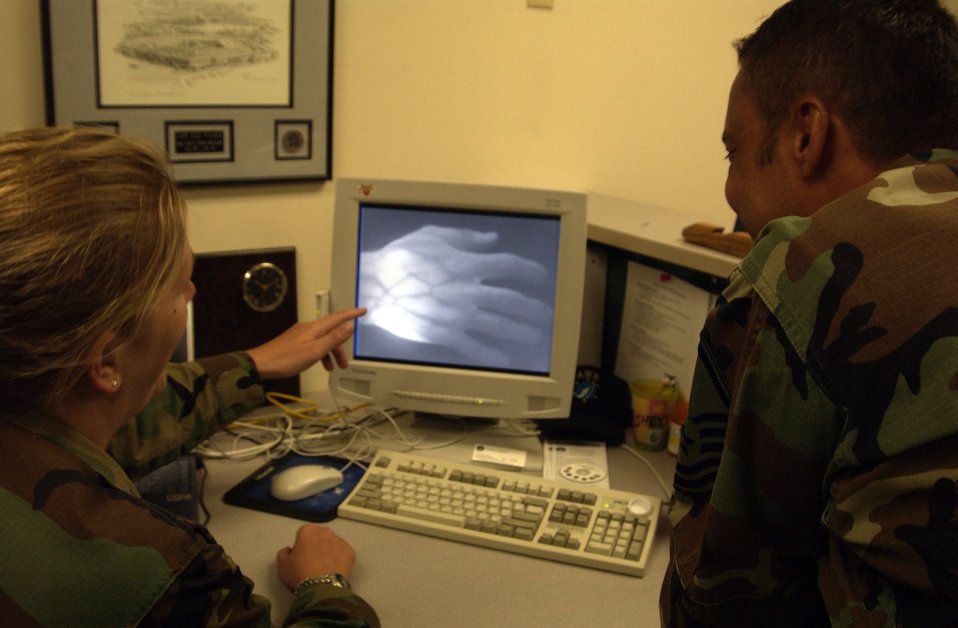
Battlelab technicians develop solutions for warfighters

MOUNTAIN HOME AIR FORCE BASE, Idaho -- Capt. Andrea Vinyard (left) explains how the Vein Viewer works to Master Sgt. Danny Deese. The new technology allows medics to see through human skin to the vascular system.